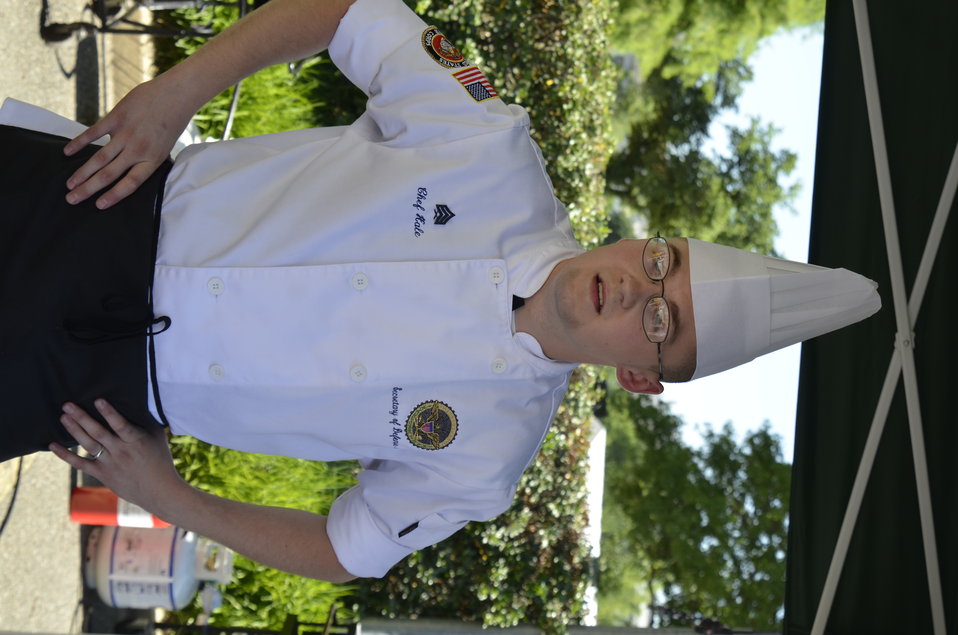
U.S. Marine Corps Sergeant (SGT) Joseph Hale prepares a meal at the Military Chefs barbeque battle held at the opening of the U.S. Department of Agriculture’s (USDA) Famers Market in the east parking lot at USDA on Friday, Jun. 6, 2014.